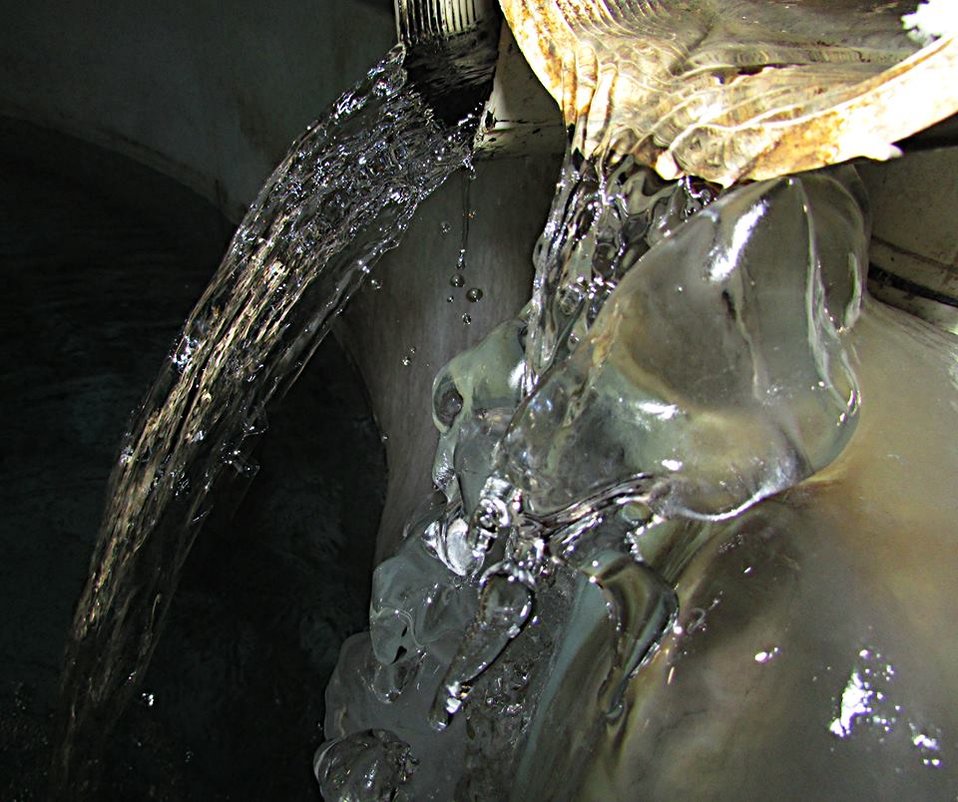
Cold and Colder

Our two sources of water at the hatchery are a well and Lewis and Clark Lake. Our well line is at 54 degrees year round but our lake line varies depending on the season.

Here you can see the difference between the 54 degree well line and 33 degree lake line that feed our wild sturgeon tank.